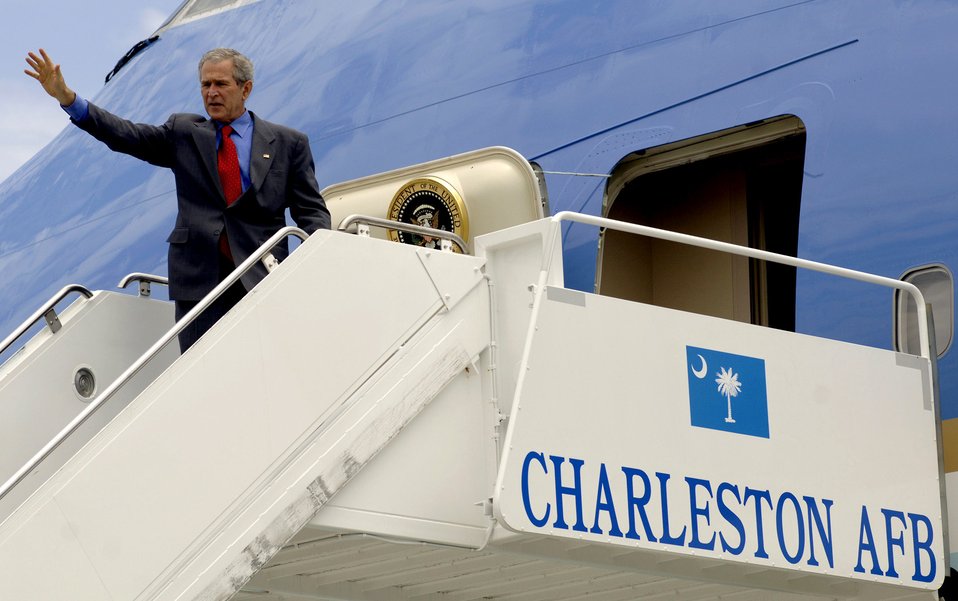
President visits Charleston, addresses military members

President George W. Bush waves to the crowd from Air Force One July 24 at Charleston Air Force Base, S.C. President Bush visited Charleston AFB, took a tour of a static C-17 Globemaster III, ate lunch with Airmen from the base and talked about the war on terrorism.